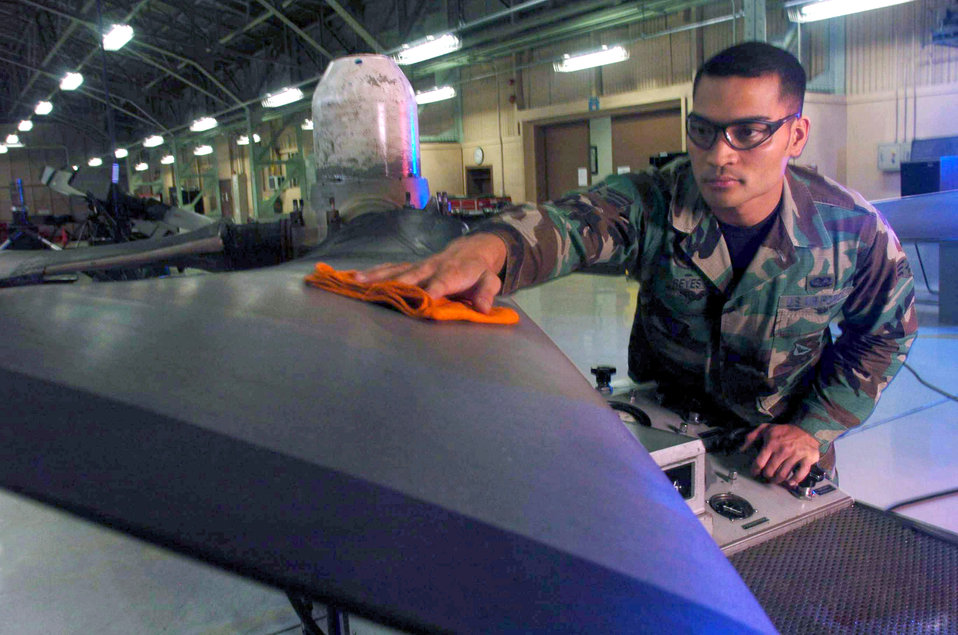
An inside look

YOKOTA AIR BASE, Japan -- Senior Airman Xavier Reyes wipes the surface of a C-130 Hercules engine propeller before a hydraulic test. He is a mechanic assigned to the 374th Maintenance Squadron's T56 engine regional repair center here. The Airmen from the center remove, inspect, repair, modify and install propeller assemblies and components on C-130s from throughout the Pacific region.